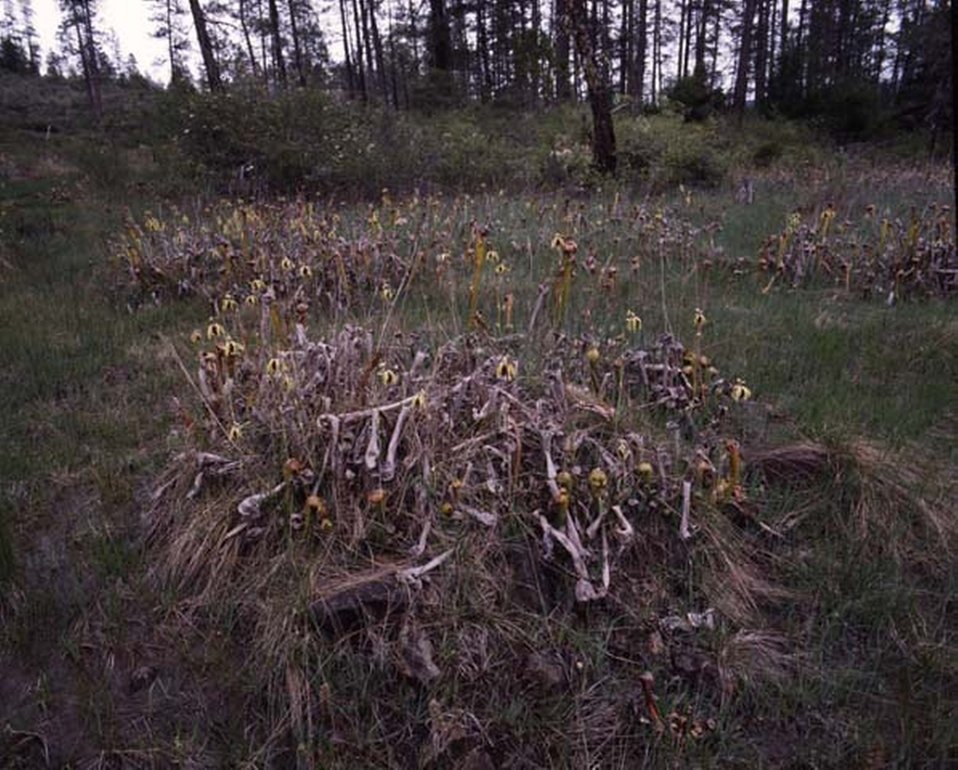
Far shot of Darlingtonia and fern.